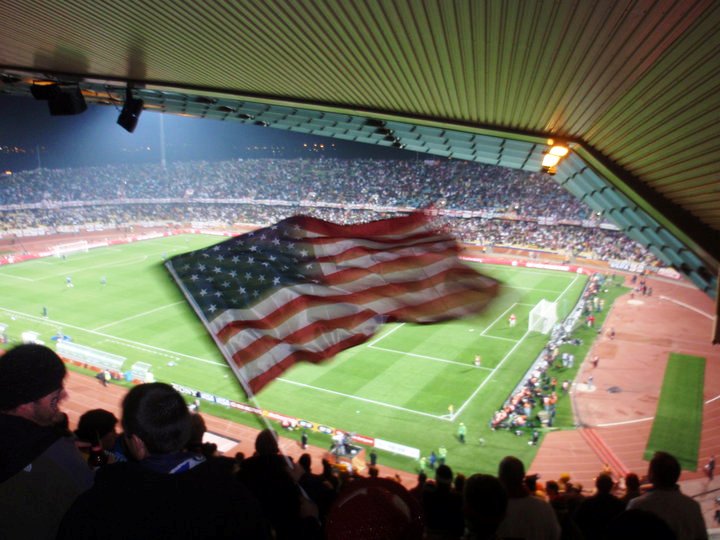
An American Waves 'Old Glory' at U.S. vs. England Match

An American fan waves 'Old Glory' at the U.S. vs. England World Cup soccer match at the Royal Bafokeng stadium in Rustenburg, South Africa, on June 12, 2010.